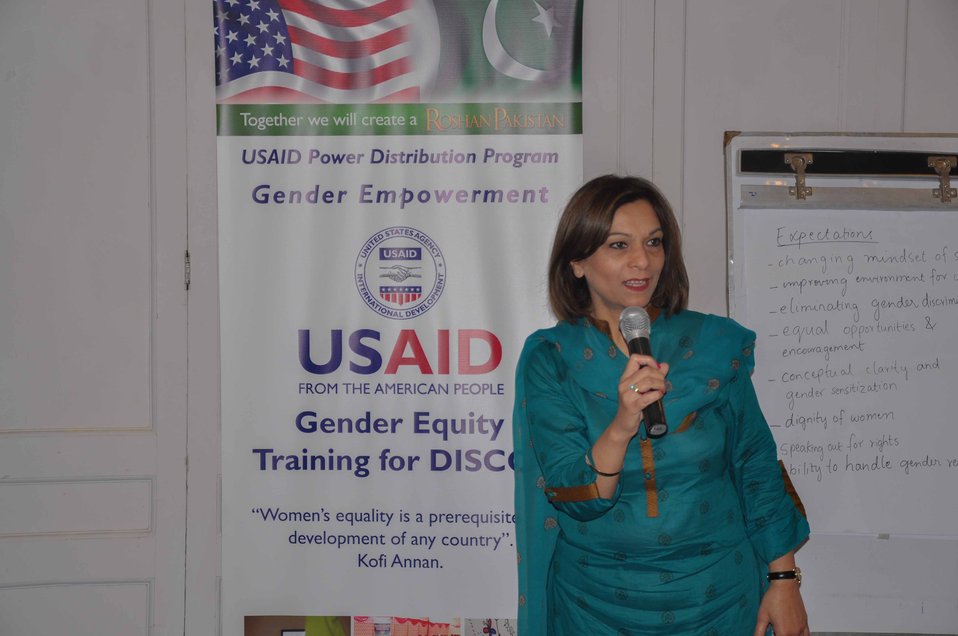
USAID helps reshaping the environment for women at DISCOs

“Gender Equity Training is a form of capacity building to make DISCO employees more familiar with gender equity requirements, develop skills in the development of that strategy, and be better prepared to adopt new work behaviors.”
Power Distribution Program Gender Strategy Team Lead
Qurat ul Ain Iftikhar